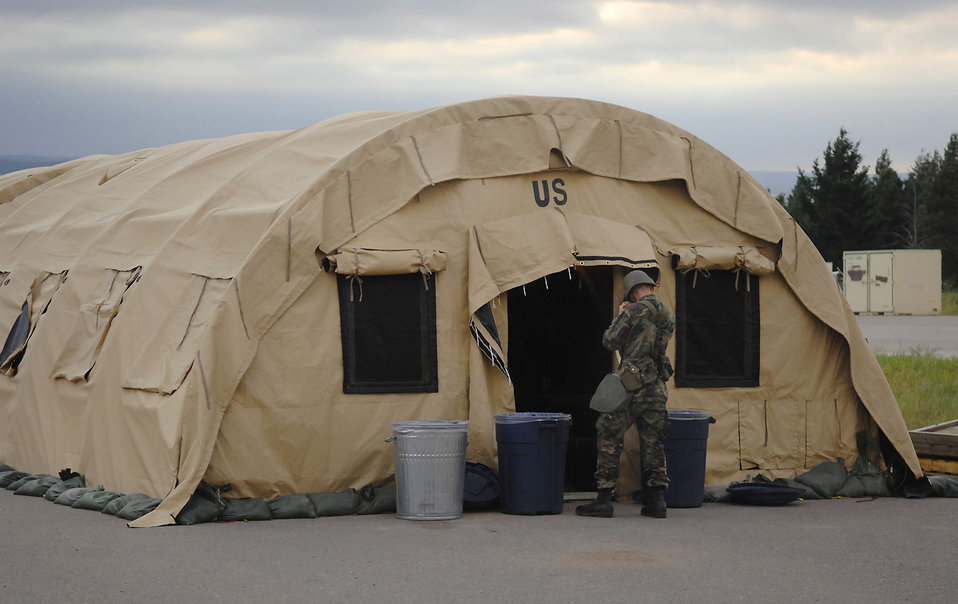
Global Engagement teaches leadership, base deployment

Cadet 3rd Class Joseph Hamilton adjusts his kevlar helmet after eating breakfast during the Global Engagement course July 10 at the U.S. Air Force Academy in Colorado. The purpose of Global Engagement is to lay the foundation of attitudes, knowledge and skills necessary to lead, fight, and win in a dynamic and diverse global environment.